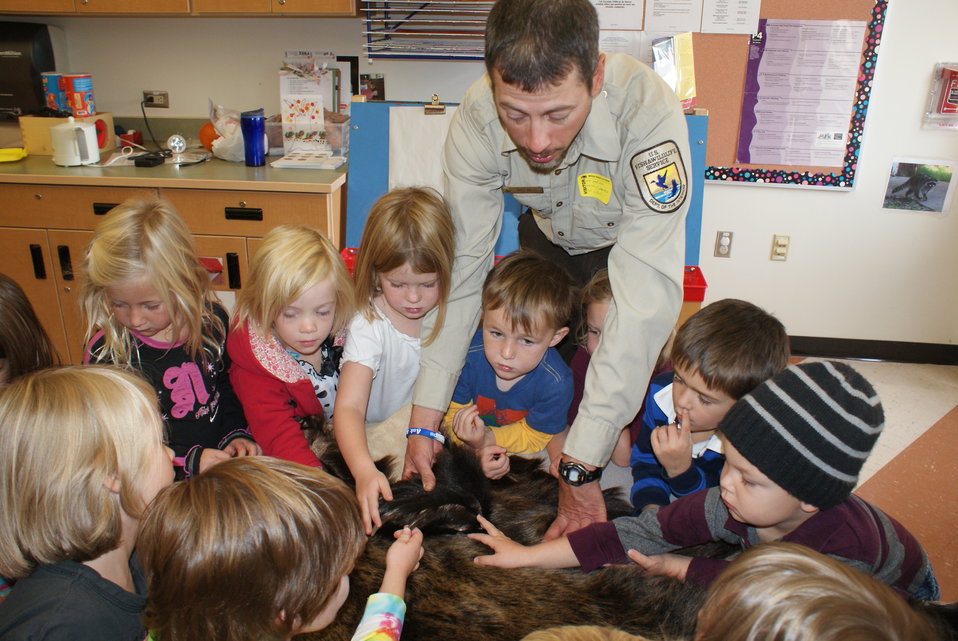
Scientists in the Community Program

U.S. Fish and Wildlife Service Mountain-Prairie Region Deputy ARD for External Affairs, Matt Kales, introduces early childhood education students at William Roberts Elementary School in Denver to some of Colorado's native and historic wildlife species.